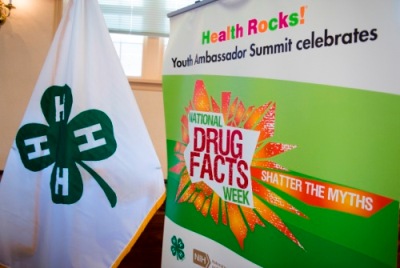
National 4-H Council Celebrates National Drug Facts Week, Launches New Healthy Living App

National 4-H Council in partnership with the National Institute on Drug Abuse (NIDA) hosted the first Health Rocks! Youth Ambassador Summit on January 30. The event, which was part of NIDA’s 4th annual National Drug Facts Week, brought together youth and adult leaders from several states and industry leaders to discuss solutions to fight substance use and abuse in their communities.